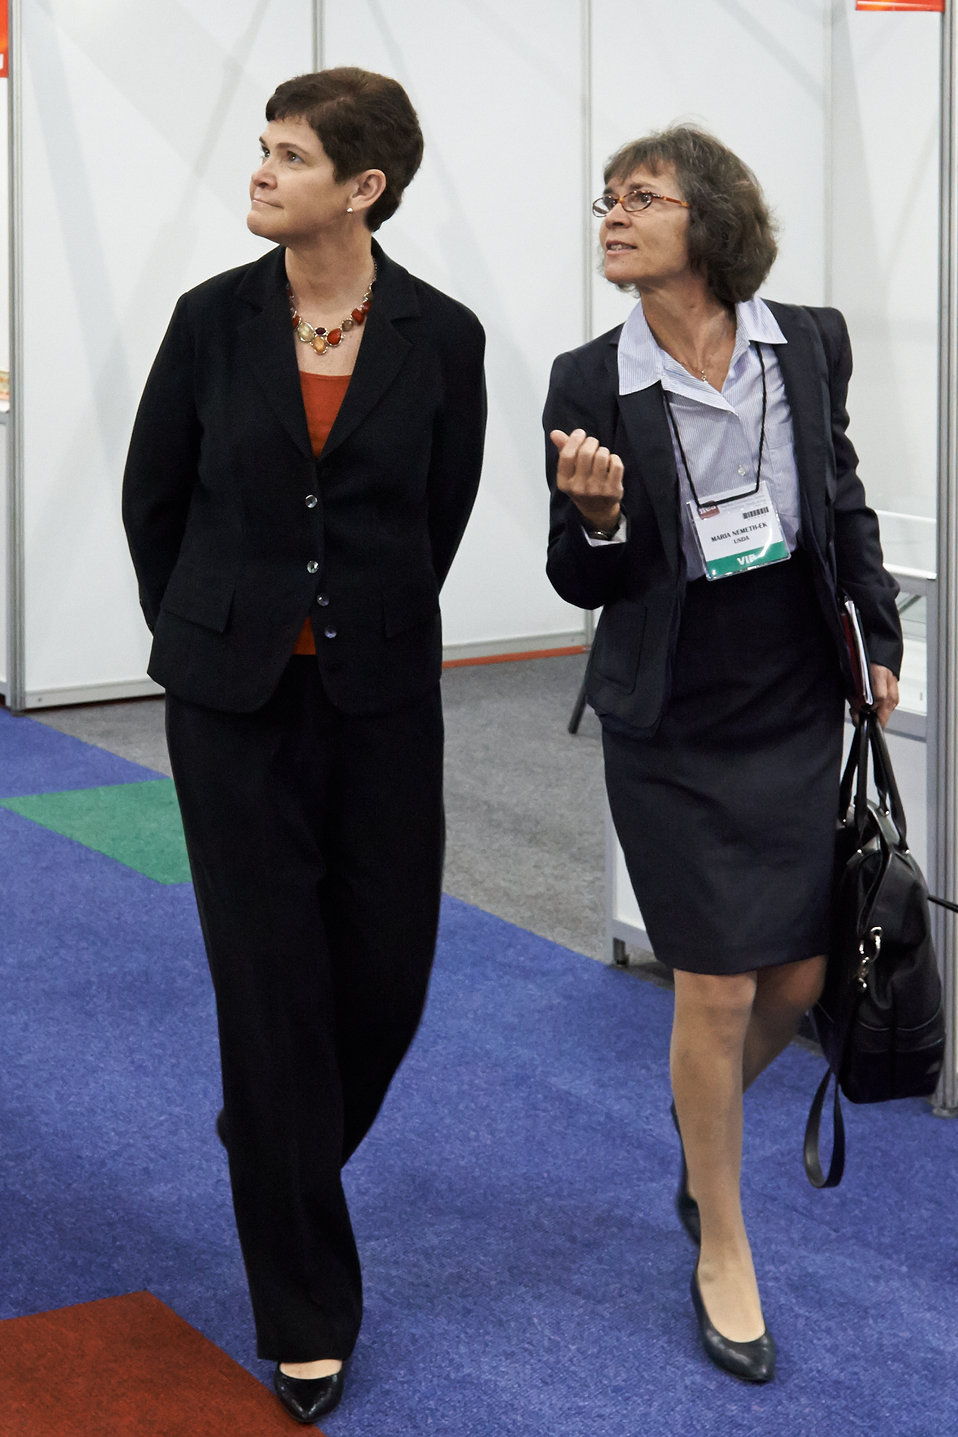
Agriculture Deputy Secretary Krysta Harden on trade mission in Johannesburg, South Africa on Wednesday, Sep. 18, 2013. Agriculture Deputy Secretary Krysta Harden led a trade mission to the Sub-Saharan Africa Business Round Table to promote U. S. agricultural trade and investment in the region, which is a long-term goal of the initiative. The trade mission includes 17 U.S. companies and 15 agricultural trade associations that represent a variety of products such as snack foods, beverages, fruit, nuts, and more.